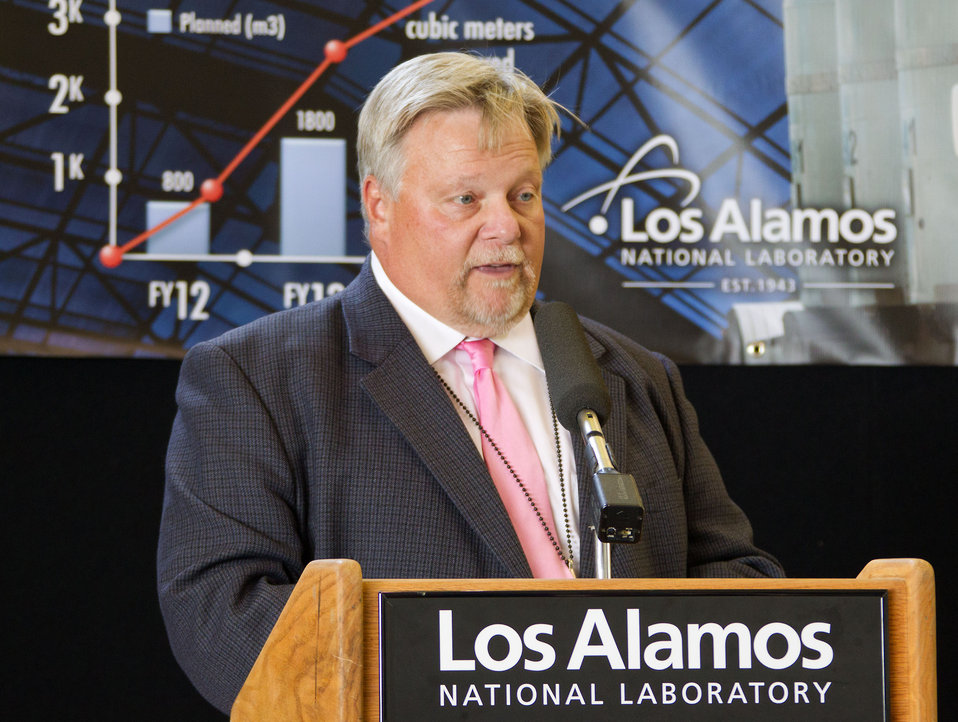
1000th Shipment of TRU Waste from LANL